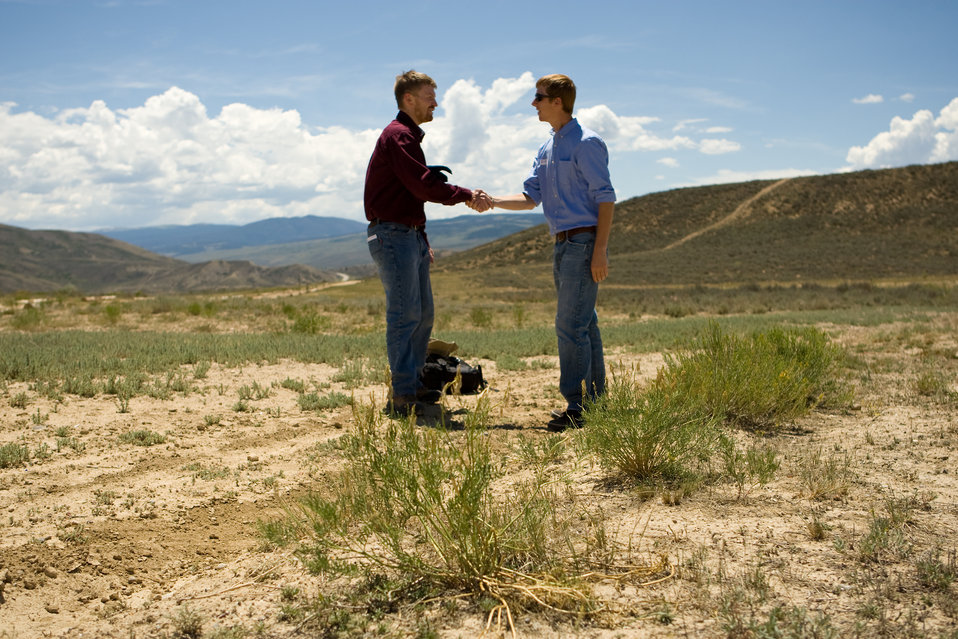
Colorado Rare Plant Conservation Initiative

The Colorado Rare Plant Conservation Initiative (RPCI) is a partnership of 23 statewide and regional agencies, private organizations, and academic institutions working to conserve 121 rare plants in Colorado. As part of these efforts the group developed the Colorado Rare Plant Conservation Strategy, developed Best Management Practices to reduce energy development impacts, addressed climate change, and developed focused strategies for the conservation of individual species at eight priority landscapes. The group has also worked to coordinate volunteer efforts for plant conservation across the state.